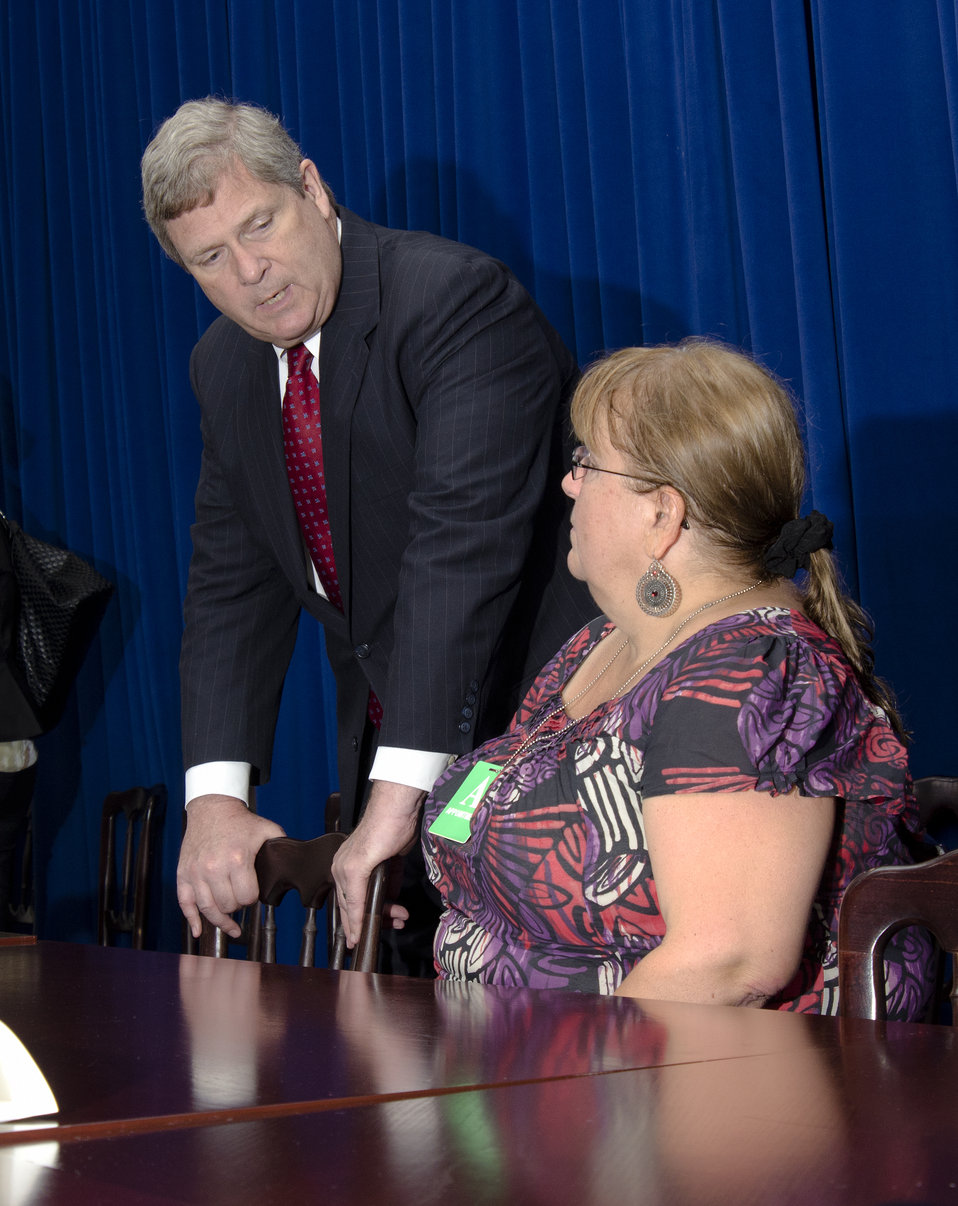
Agriculture Secretary Tom Vilsack talks with Linda Roberson, Rural Town Manager, Zolfo Springs, Florida., attended a meeting at the White House, in Washington, DC, on July 6, 2011. She was asked to participate along with President Barack Obama, Agriculture Secretary Tom Vilsack, the President's Domestic Policy Adviser Melody Barnes and rural communities leaders from across the country for the White House Rural Champions of Change event to strengthen rural communities and promote economic growth. : Linda Roberson is the Town Manager and Finance Director of Zolfo Springs, Florida. The Town Zolfo Springs in a very small rural town in Hardee County, Florida. The town has financed 2 water and waste projects, purchased a back hoe, and a city hall ADA improvement project. They have worked very hard to mitigate issues with their old water system and have been successful in that effort. The town was nearly destroyed by Hurricane Charlie in 2004. Since then they city has rebuilt its police and fire station and continues to make efforts to improve the town both structurally and financially. They provide a self-nomination for the Community Development award that has more details.